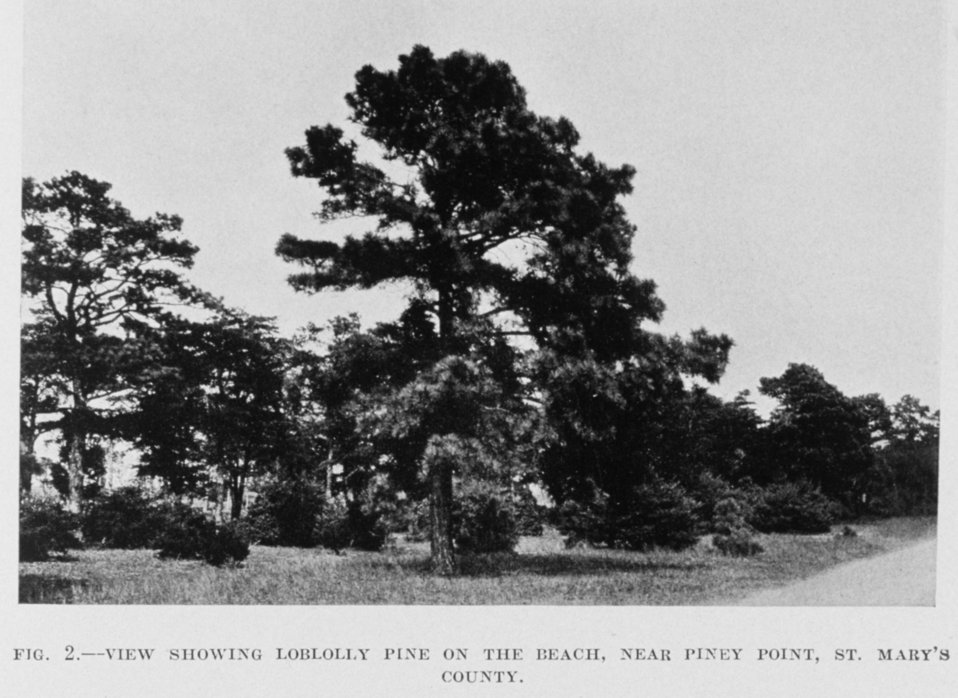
Loblolly pine near the beach in St. Mary's County.